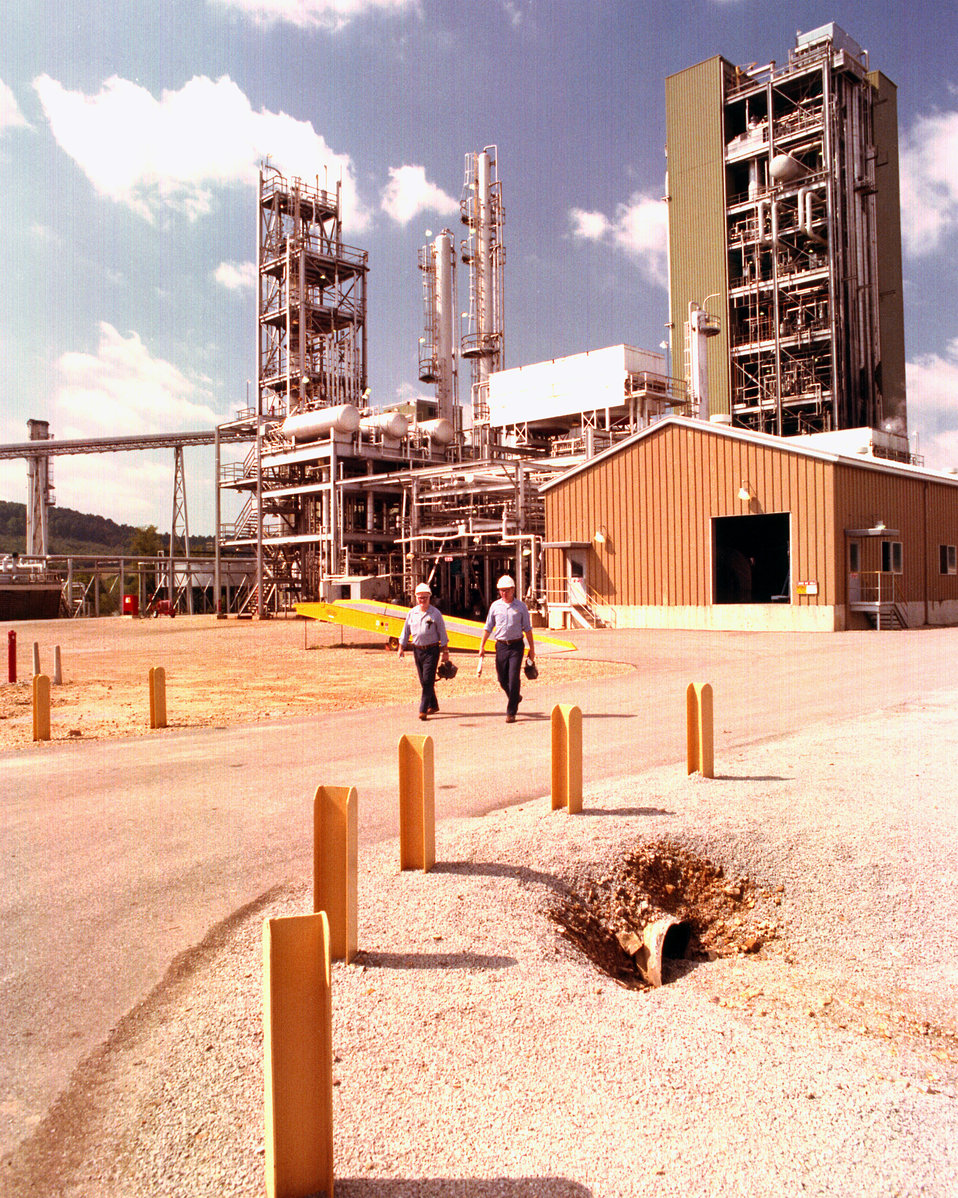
WORKERS LEAVING THE HIGH BTU COAL GASIFICATION PLANT.

THE BIGAS PILOT PLANT HAS A TWO-STAGE, ENTRAINED-BED GAS- IFIER. IN THIS GASIFIER, PULVERIZED COAL IS CONVERTED TO METHANE-RICH GAS BY REACTING THE COAL WITH STEAM AND OXYGEN UNDER HIGH PRESSURE. THE METHANE-RICH GAS IS PROCESSED TO REMOVE THE HYDROGEN SULFIDE AND CARBON DIOXIDE WHICH LEAVES THE HIGH BTU GAS. THE BIGAS REACTOR CAN HANDLE ALL TYPES OF COAL. DUE TO THE HIGH OPERATING TEMPERATURE OF OVER 2500 DEGREES F., THERE IS NO TAR IN THE PRODUCT GAS, THUS SIMPLIFYING THE GAS CLEANUP STEP. HIGH METHANE YIELDS ARE ACHIEVED WITHOUT METHANATION, AND COALS CAN BE GASIFIED WITHOUT PRIOR TREATMENT BECAUSE THE PROCESS USES AN ENTRAINED-BED RATHER THAN A FIXED-BED OR FLUIDIZED-BED SYSTEM.